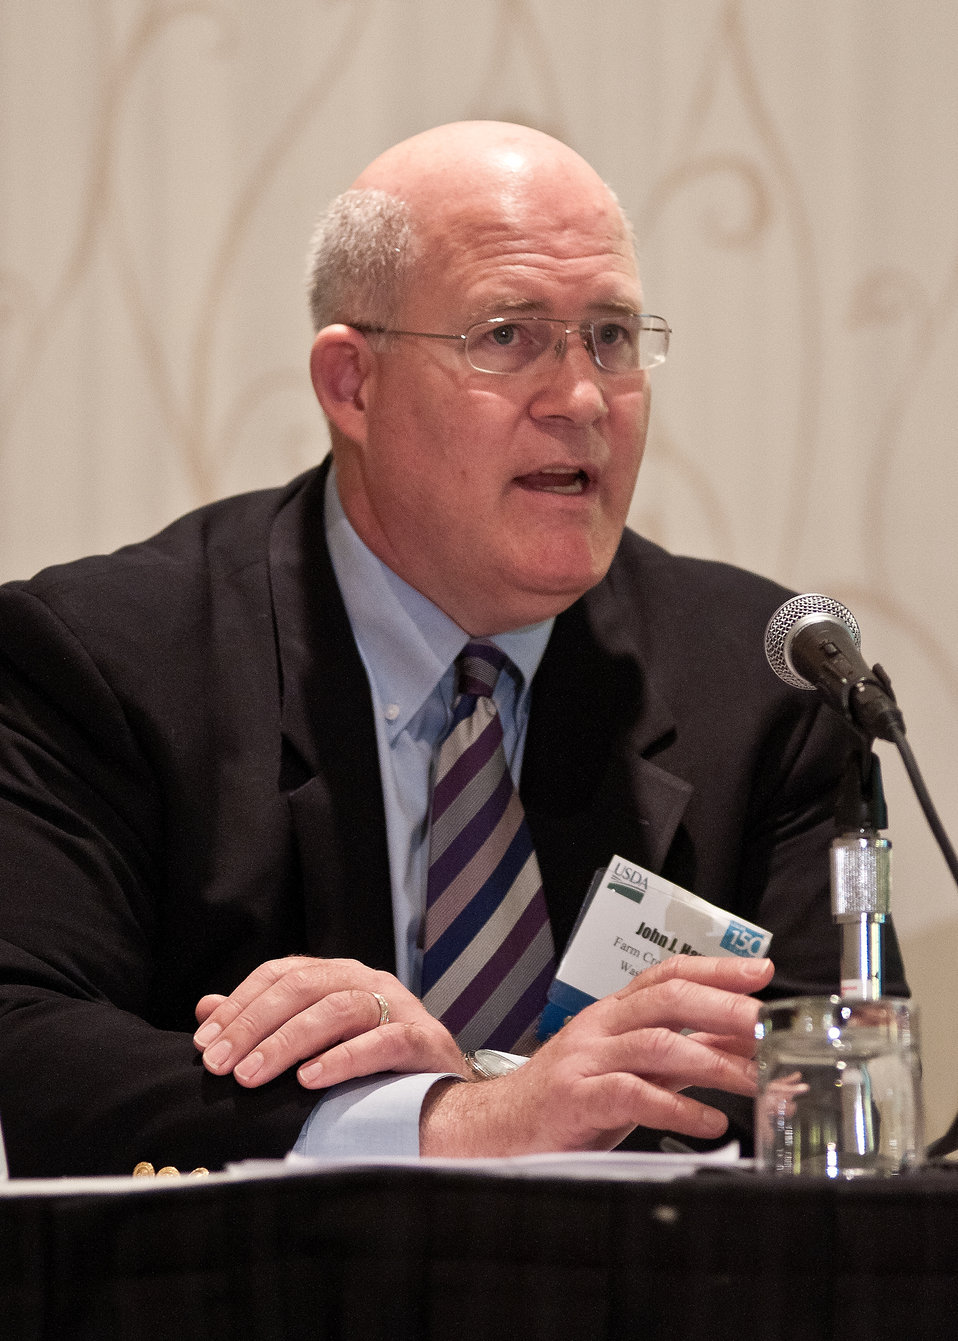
John Hays, Senior Vice President-Policy Analysis and Development, Farm Credit Council, Washington, D.C., spoke at the Agricultural Financial Markets and Investment afternoon breakout session at the 2012 Agricultural Outlook Forum, “Moving Agriculture Forward, Growing, Innovating and Celebrating 150 Years” held at the Crystal gateway Marriott Hotel Arlington, Virginia, Friday, February 24, 2012. The session focused on patterns of financial investment in United States agricultural assets, changes in types of lenders serving the agriculture sector and the economics of land prices.